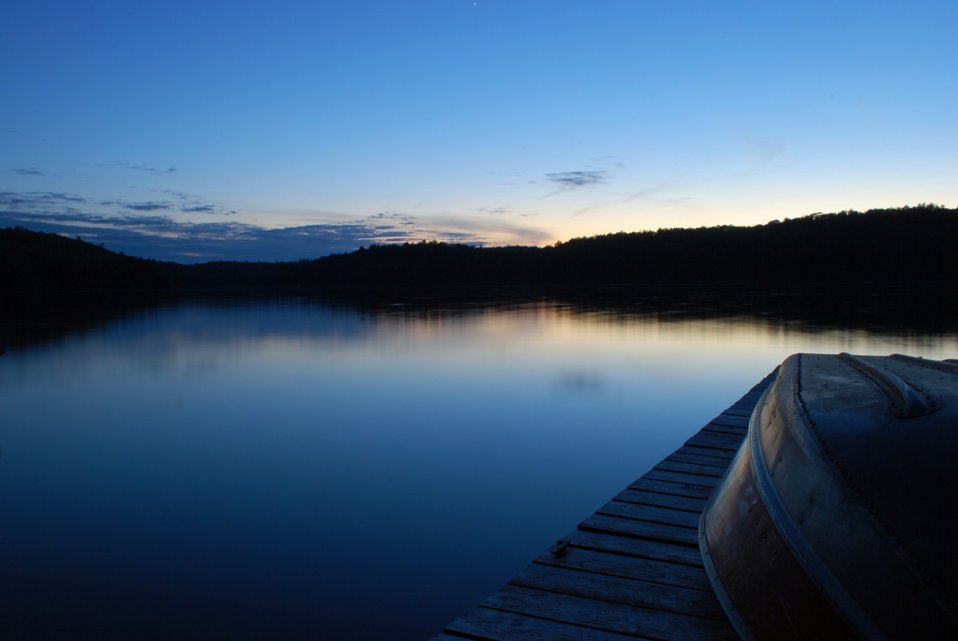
Twilight over lake with boat.